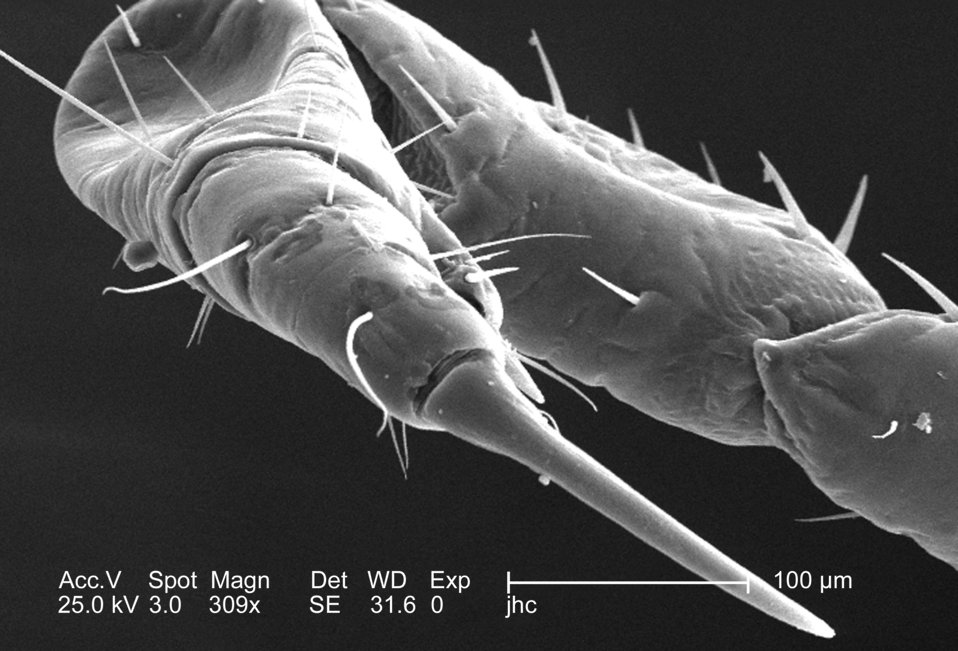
At a moderate magnification of 309x, this 2006 scanning electron micrograph (SEM) depicted an enlarged dorsal view of the right flexed foreleg of a female body louse, Pediculus humanus var. corporis. The entire leg is not quite visible, but what is visible includes the most distal segment, known as the 'pretarsus', followed by the more proximal 'tarsus', then the 'tibia', 'femur', and 'trochanter'. The final segment, of the six segments from which each leg is composed, the 'coxa', is visible under reduced magnification, in PHIL# 9242. In the case of the louse, the leg segments are very stout, and end in claws, which it used to firmly grasp clothing, or a host's hair shafts.